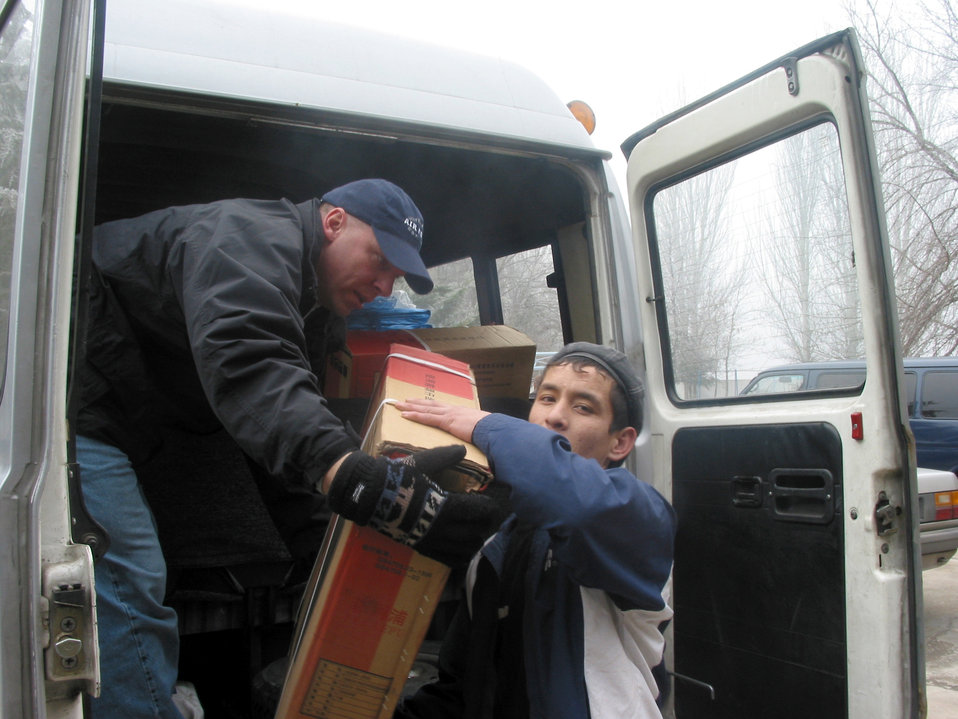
Providing heat

JANY GER, Kyrgyzstan -- Staff Sgt. Steven Stillings hands a heater to a student at a local vocational school during a visit to the school Jan. 23. The school received 30 heaters from airmen at nearby Manas Air Base to help heat their dormitories. Sergeant Stillings is assigned to the 376th Expeditionary Civil Engineer Squadron.